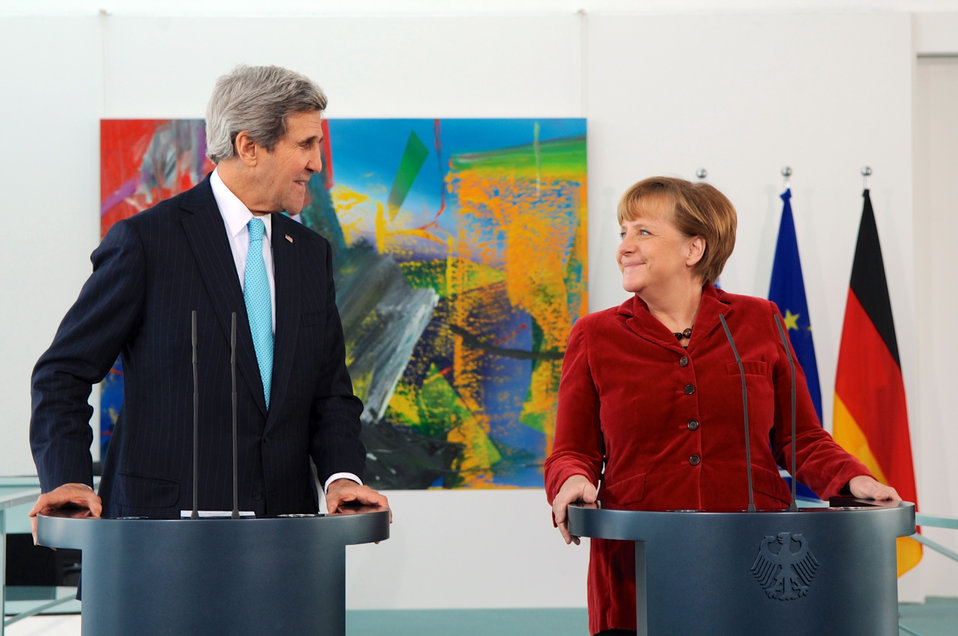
German Chancellor Merkel, Secretary Kerry Exchange Smiles During Press Statements

U.S. Secretary of State John Kerry and German Chancellor Angela Merkel smile at each other while making a pair of statements to reporters at the Chancellery in Berlin, Germany, on January 31, 2014.